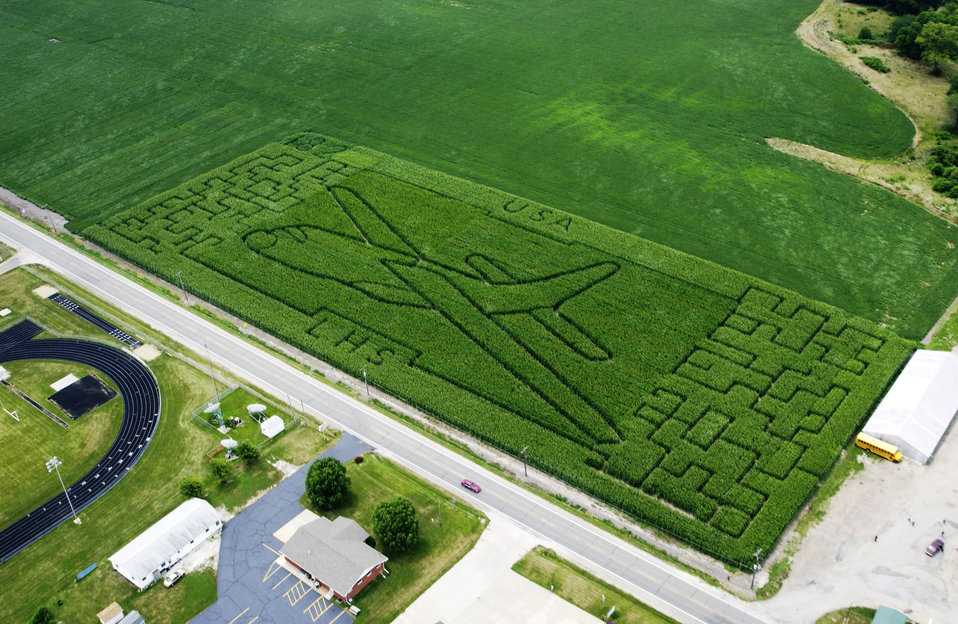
If you build it, they will come

LEWISTOWN, Ill. -- Larry Webb created a maze and artistic renderings of a C-130 and American Flag in 6 acres of corn on his 1,200-acre farm. After making the design on his computer, he used a weed mower to cut out the design in the field.